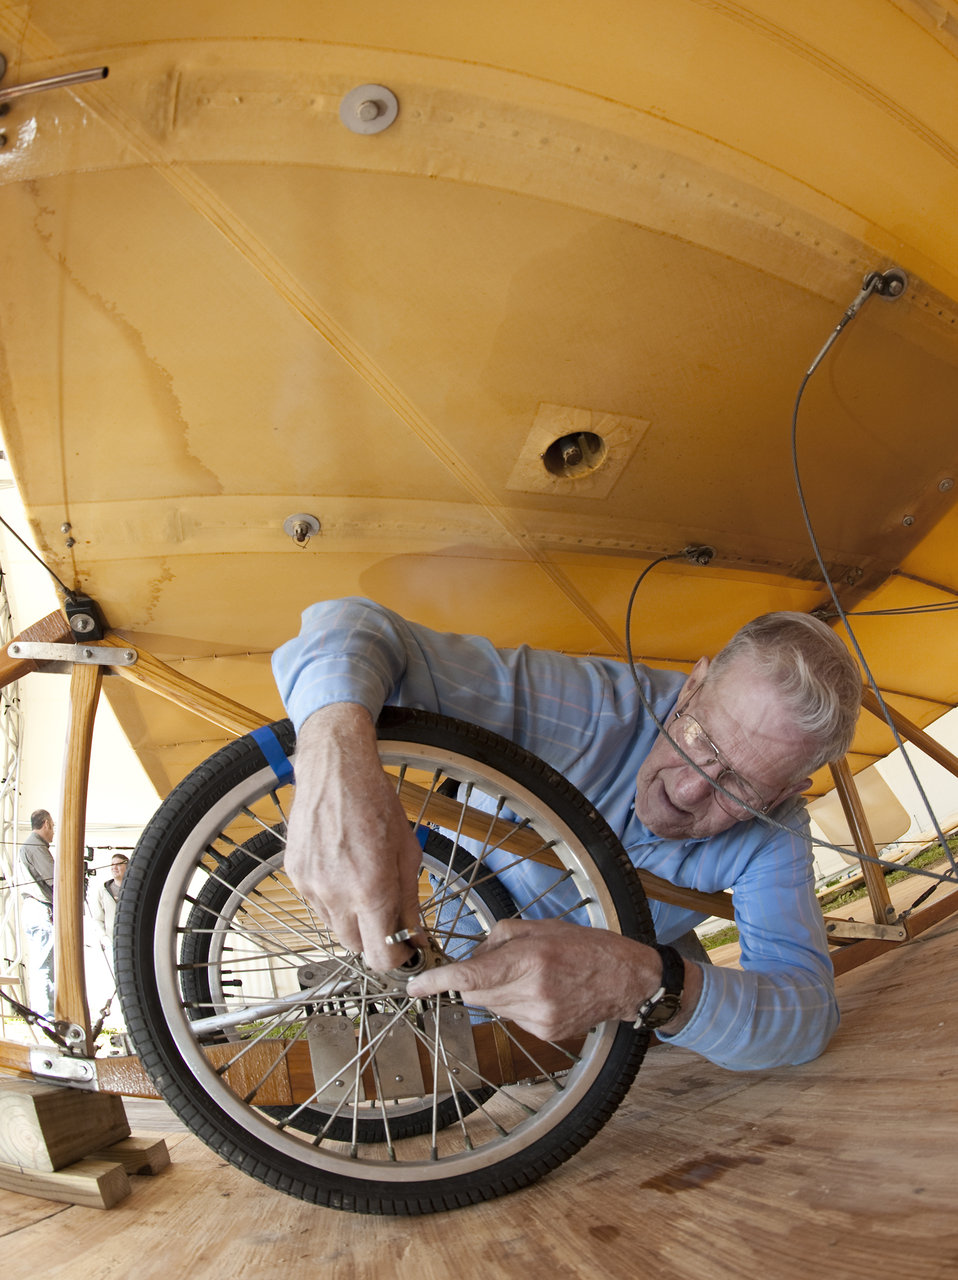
Frank Goepferich attaches the right dual wheel assembly to the undercarriage on